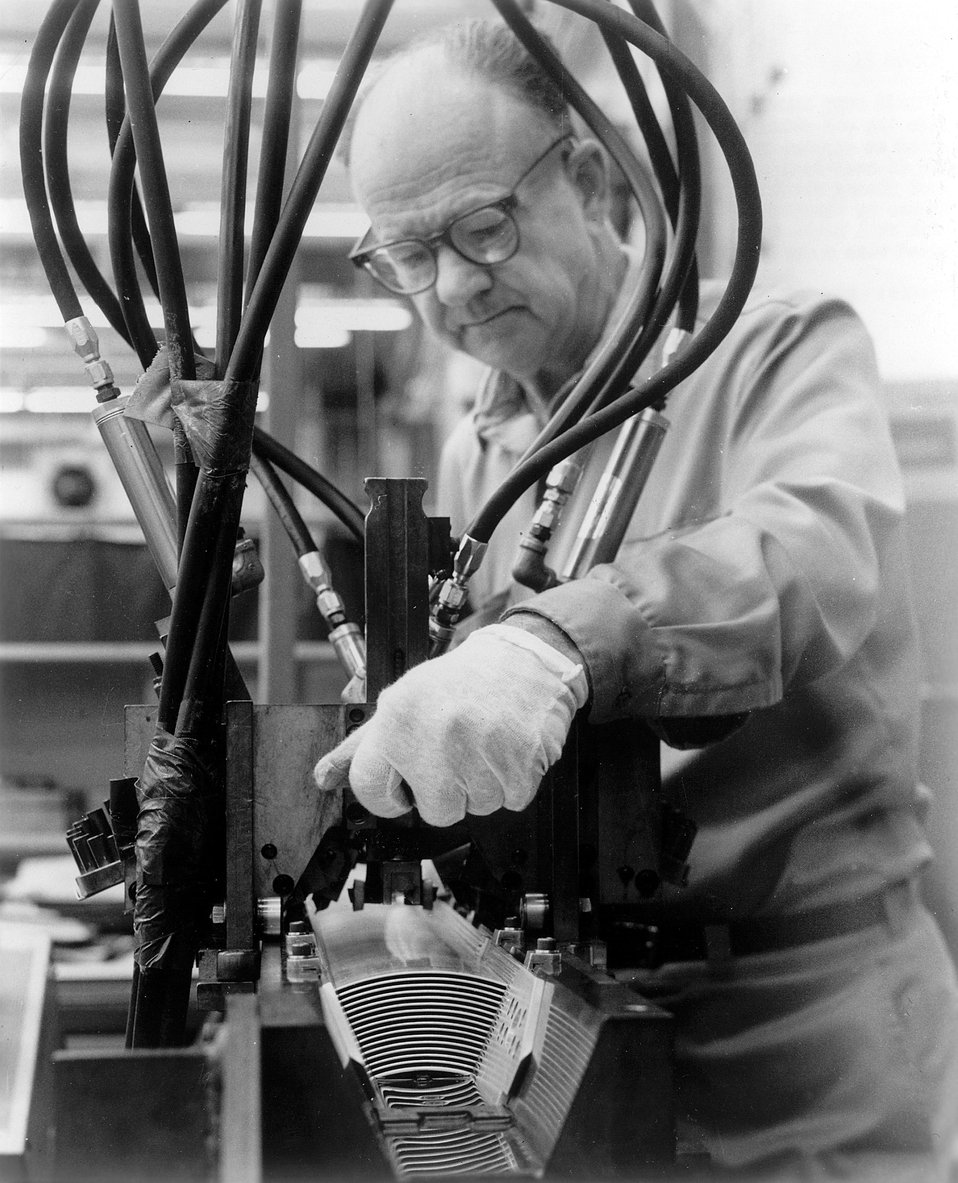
Nuclear Fuel Elements for the Advanced Test Reactor, like the one shown in a swagging machine, were fabricated at the Atomic s International, Canoga Park, Calif. The 66-inch-long assemblies have 19 curved-aluminum fuel plates which are precision spaced and held in an arc by aluminum side panels. Circa 1970.